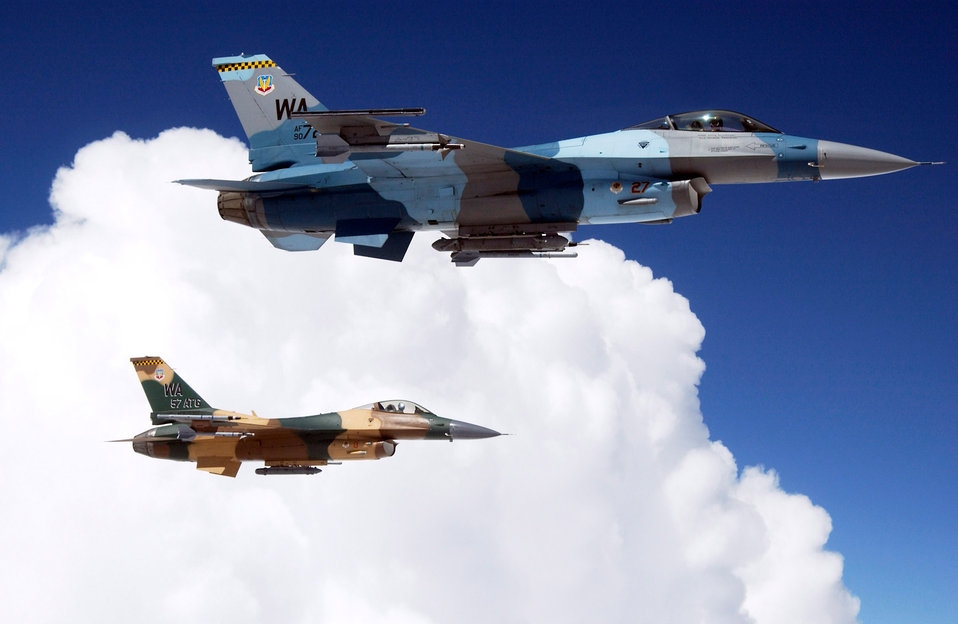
Flying colors

OVER NEVADA -- Two F-16 Fighting Falcons from the 64th Aggressor Squadron at Nellis Air Force Base, Nev., wait to be refueled by a KC-135 Stratotanker during a Red Flag mission recently. The F-16s have a unique paint scheme to match their role as simulated enemy Mig aircraft during quarterly Red Flag exercises.